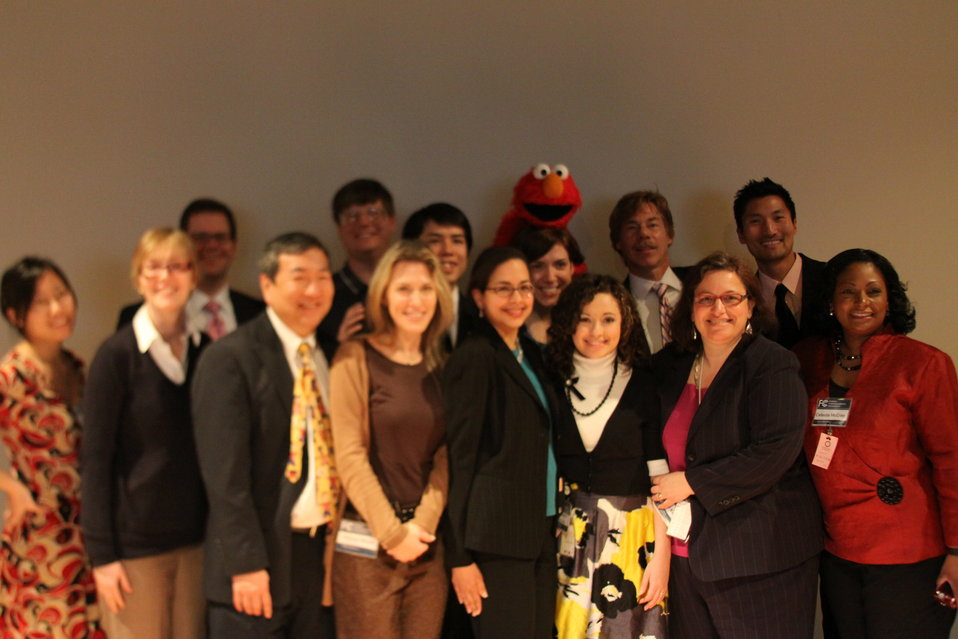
March 12, 2010- Smithsonian Broadband with Elmo